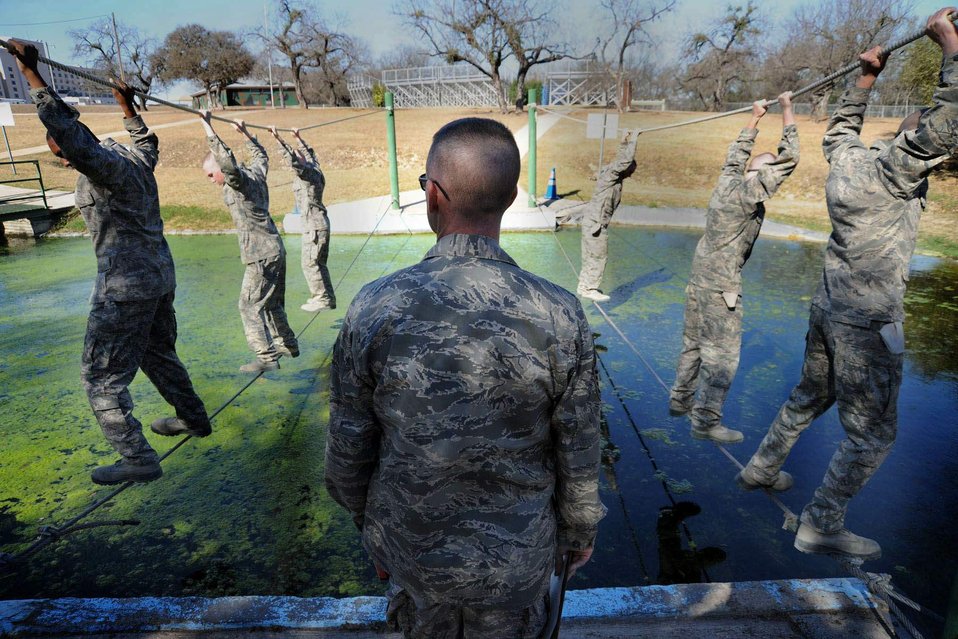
Basic training

At the obstacle course at Lackland Air Force Base, Texas, basic trainees are watched by a military training instructor as they pass over an algae-filled water obstacle on a cable and rope bridge. These trainees are on their way to becoming ?warrior Airmen.?